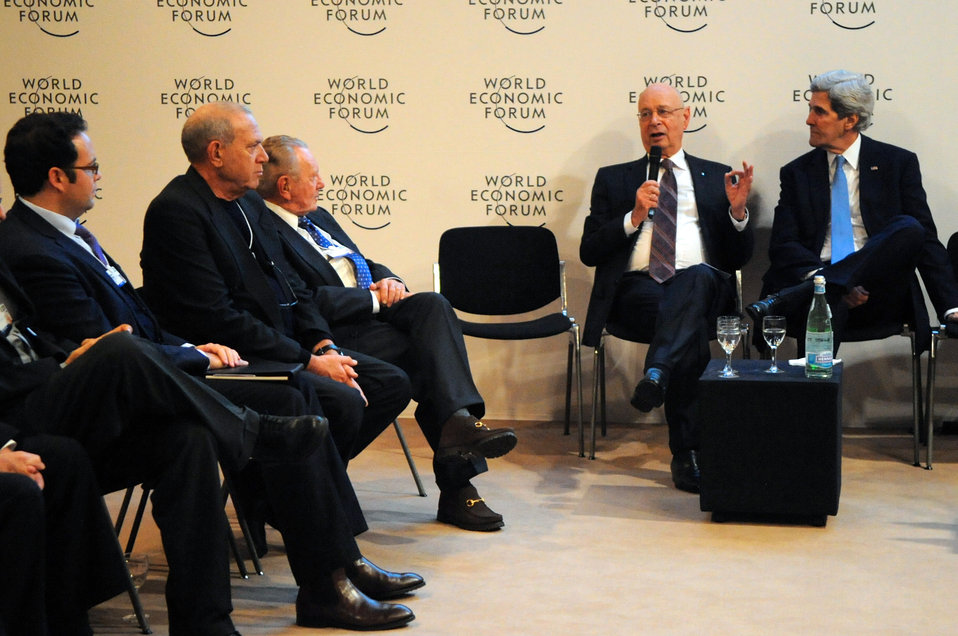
Secretary Kerry Participates in Roundtable Discussion With 'Breaking the Impasse' Group

Founder Klaus Schaub introduces U.S. Secretary of State John Kerry to the membership of the pro-Middle East peace group -- Breaking the Impasse -- on the sidelines of the World Economic Forum in Davos, Switzerland, on January 24, 2014.